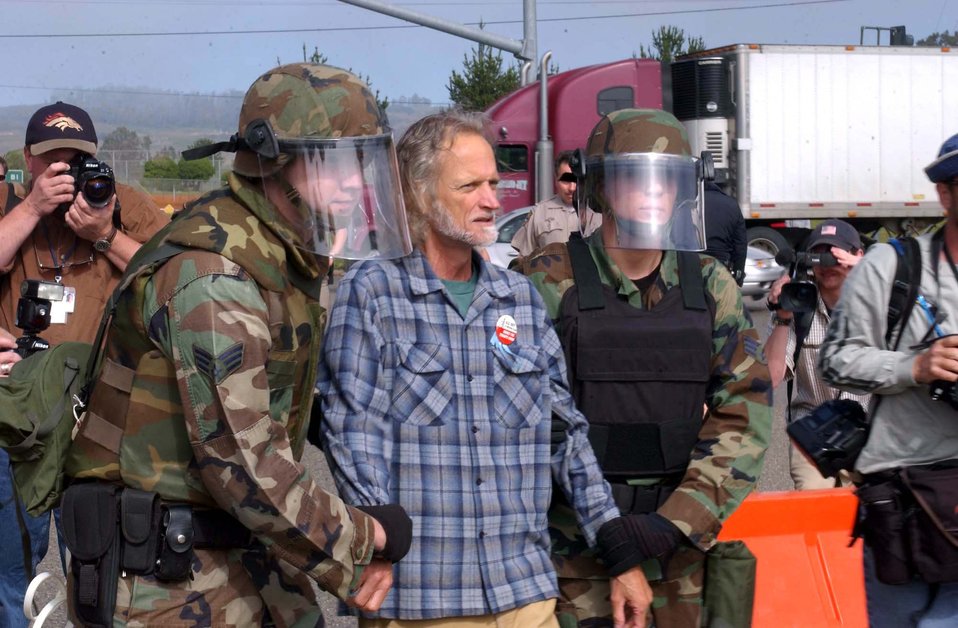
Crossing the line

VANDENBERG AIR FORCE BASE, Calif. -- Vandenberg security forces apprehend Sanderson Beck March 22 at the base's Santa Maria Gate. After crossing the green line onto Vandenberg property, Beck announced he is running for President of the United States. Security forces gave him two minutes to leave the premises and when he refused, they aprehended him.